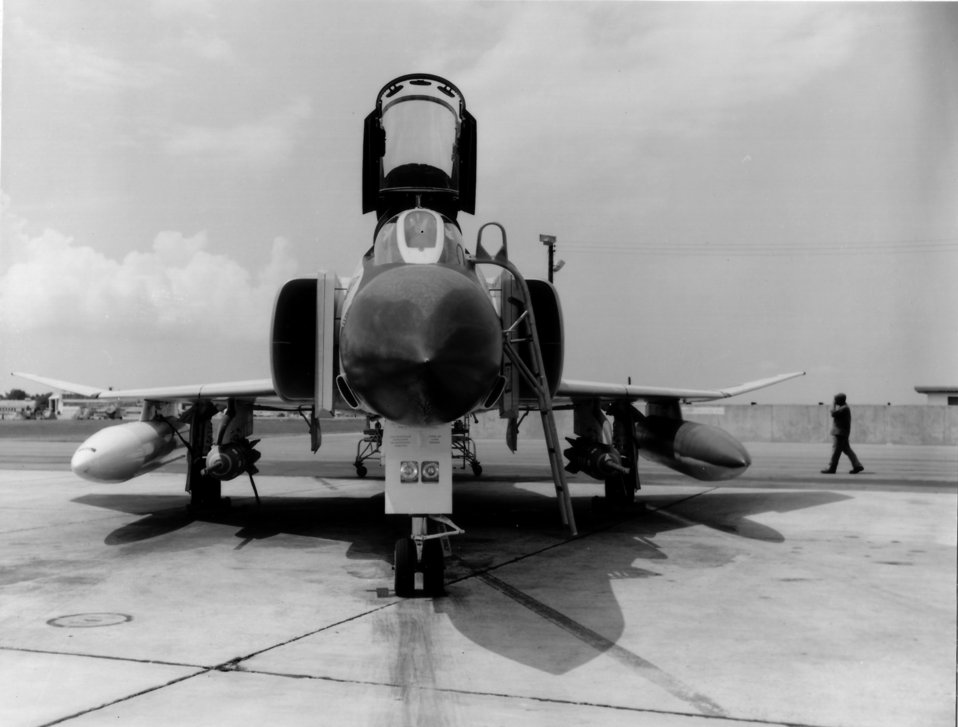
1960's -- F-4 Phantom